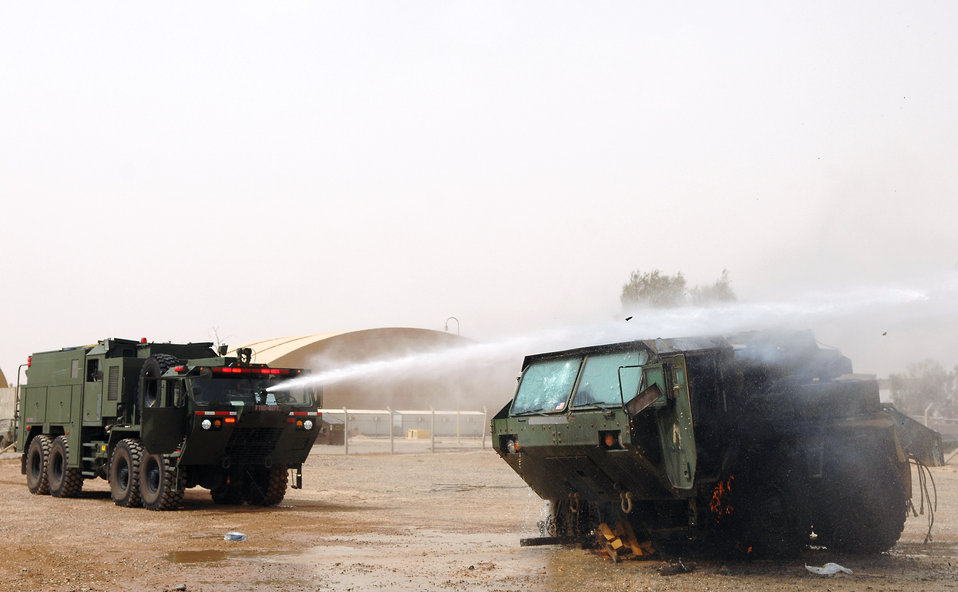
Fire it up

Members of the 332nd Expeditionary Civil Engineer Squadron and 8th Ordnance Company fire departments put out a vehicle fire with a bumper mounted turret hose May 19 at Balad Air Base, Iraq. Pump and roll procedures, which encompass the ability to drive and fight a fire simultaneously, are vital to extinguishing vehicle fires. Doing practical applications of firefighting techniques that mimic possible real-world situations is the best way to ensure the firefighters are prepared at all times.